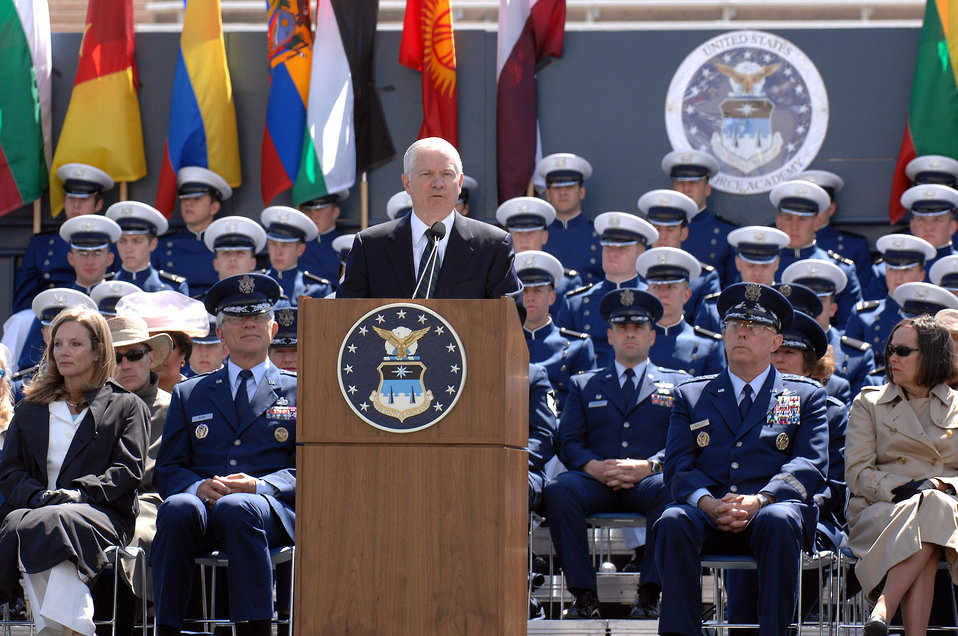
From cadet to lieutenant

Secretary of Defense Robert M. Gates gives the commencement speech during the 2007 U.S. Air Force Academy Graduation Ceremony May 30 in Colorado. Each of the 977 graduating members earned a bachelor of science degree and a commission as a second lieutenant in the Air Force.